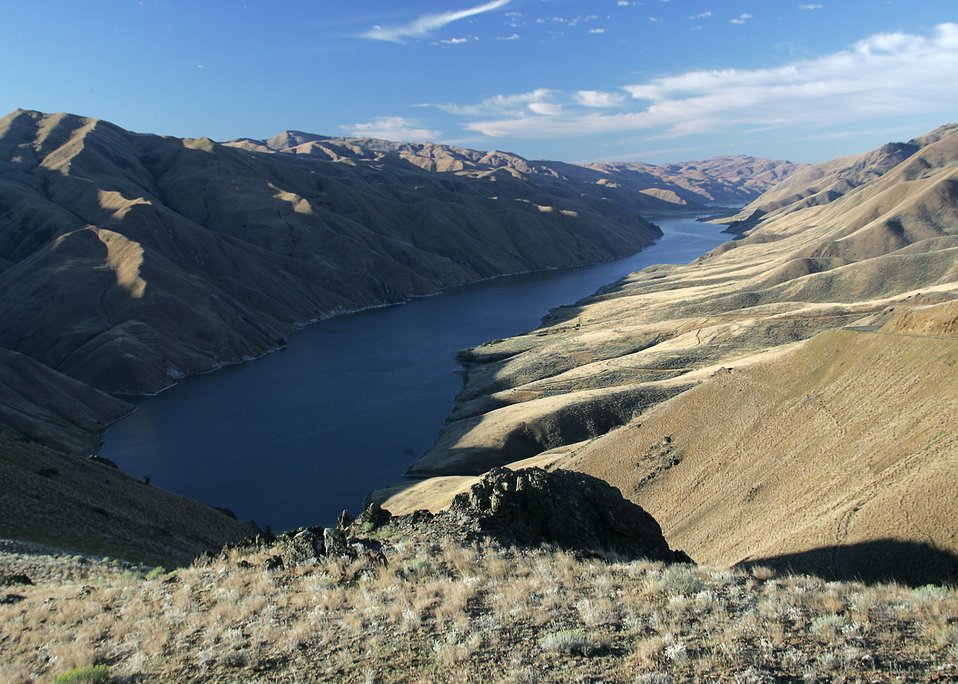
Sunrise on the Snake River Backcountry Byway.